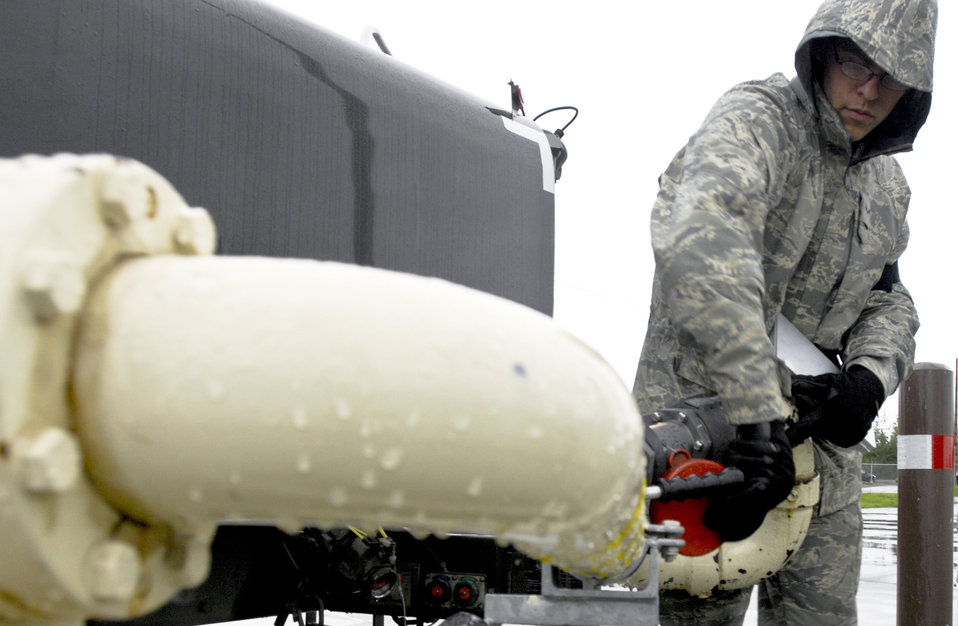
Airman folds in Plus 100 hose

Airman 1st Class Nathan Lewis folds in the Plus 100 hose Sept. 1, 2009, at Elmendorf Air Force Base, Alaska. Base members began using Plus 100 additive in their JP-8 aviation fuel Sept. 1. The additive helps prevent buildup in F-15 Eagle and F-22 Raptor engines; therefore it will reduce the amount of maintenance needed on those engines. Airman Lews is assigned to the 3rd Logistics Readiness Squadron.